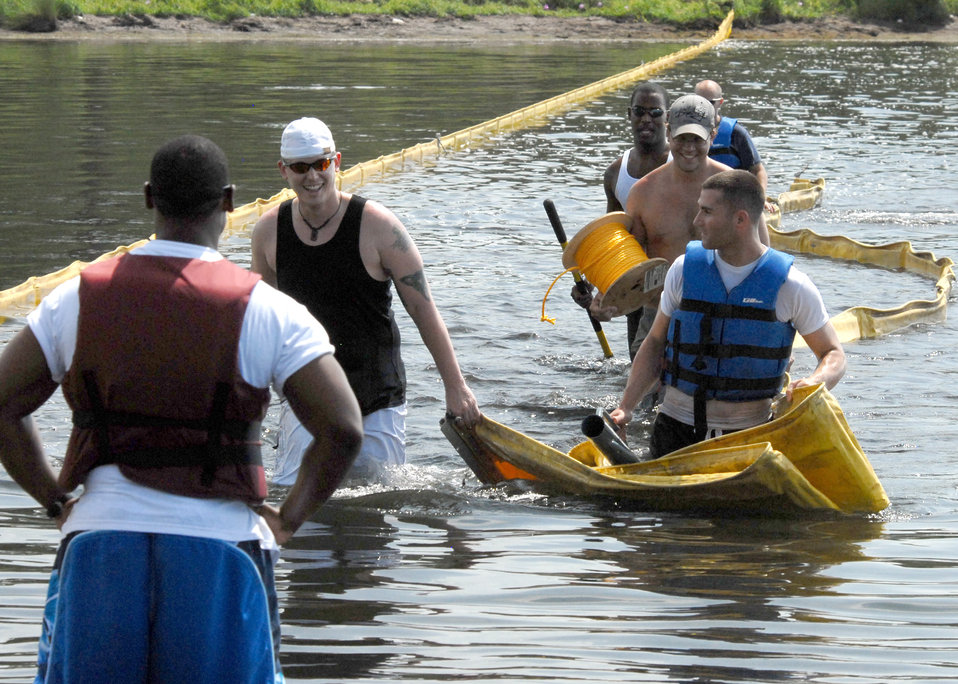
Eglin boom

Volunteers bring the towed oil boom into shore prior to installing it along one of many shorelines July 14, 2010, at Eglin Air Force Base, Fla. Boom is an oil containment device used to trap oil in the water so it can be collected before reaching the shore..